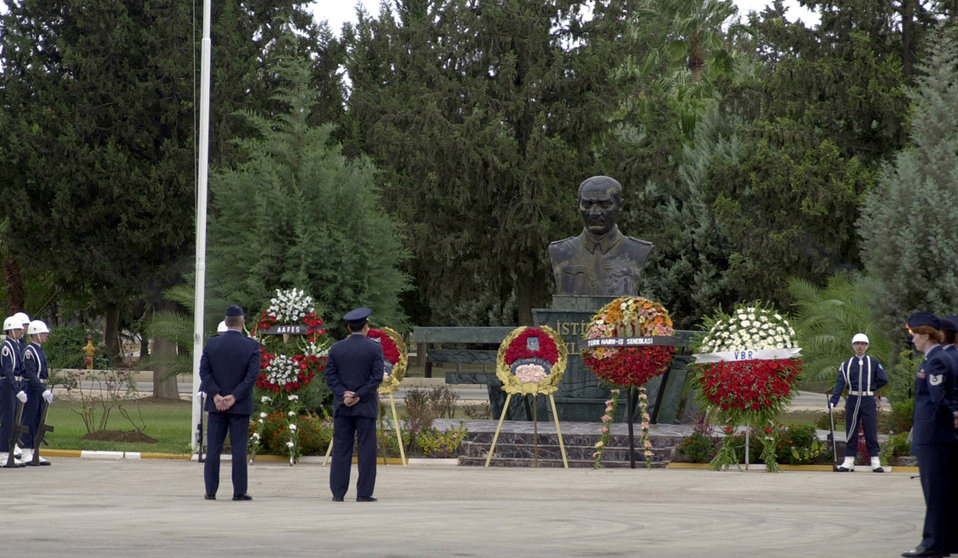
A Turkish honor

INCIRLIK AIR BASE, Turkey -- Col. Michael Arnold (left) and Turkish air force Col. Adnan Kul lead servicemembers in a Memorial Day ceremony Nov. 10 for Ataturk, the founder of the Republic of Turkey. This year marked the 65th anniversary of his death. Each year, people throughout Turkey stop and honor Ataturk with two minutes of silence. Arnold is the deputy commander of the 39th Air Base Group, and Kul is the chief of operations for the 10th Tanker Base.